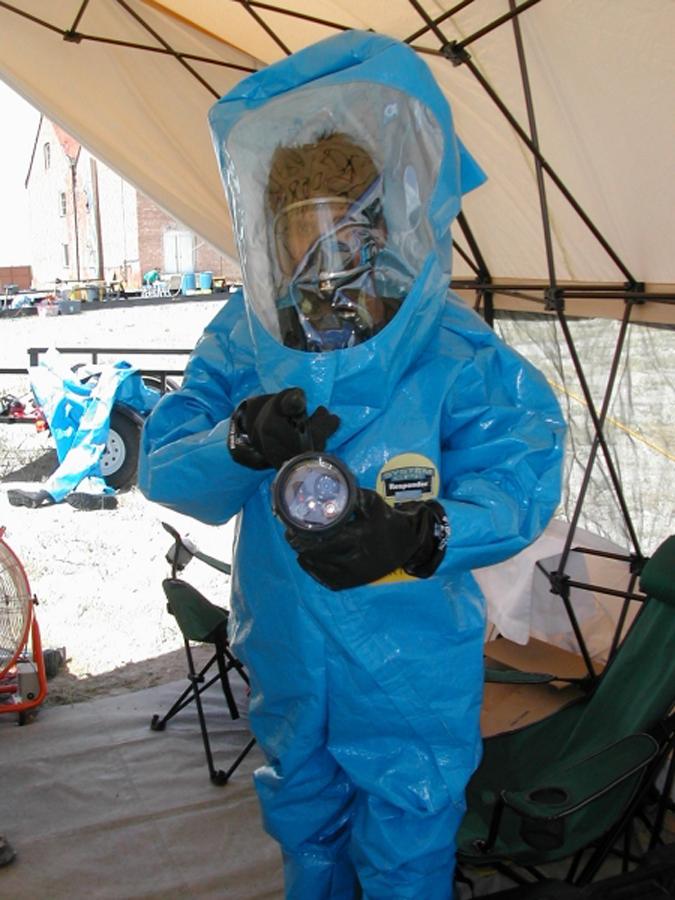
HAZMAT CAM DEVELOPED AT INL FOR EMERGENCY RESPONDERS.

HAZMAT CAM IS A PORTABLE, WIRELESS VIDEO CAMERA SYSTEM HOUSED IN A TOUGH, WATER PROOF FLASHLIGHT BODY. THE SYSTEM SENDS BACK REAL-TIME IMAGES TO A VIDEO MONITOR OR COMPUTER AT A COMMAND POST LOCATED UP TO SEVERAL MILES FROM THE INCIDENT AREA. A CLEAR, RELIABLE IMAGE IS RECEIVED EVEN UNDER LESS THAN PERFECT CONDITIONS, SUCH AS WITHIN METAL BUILDINGS OR CONCRETE TUNNELS.